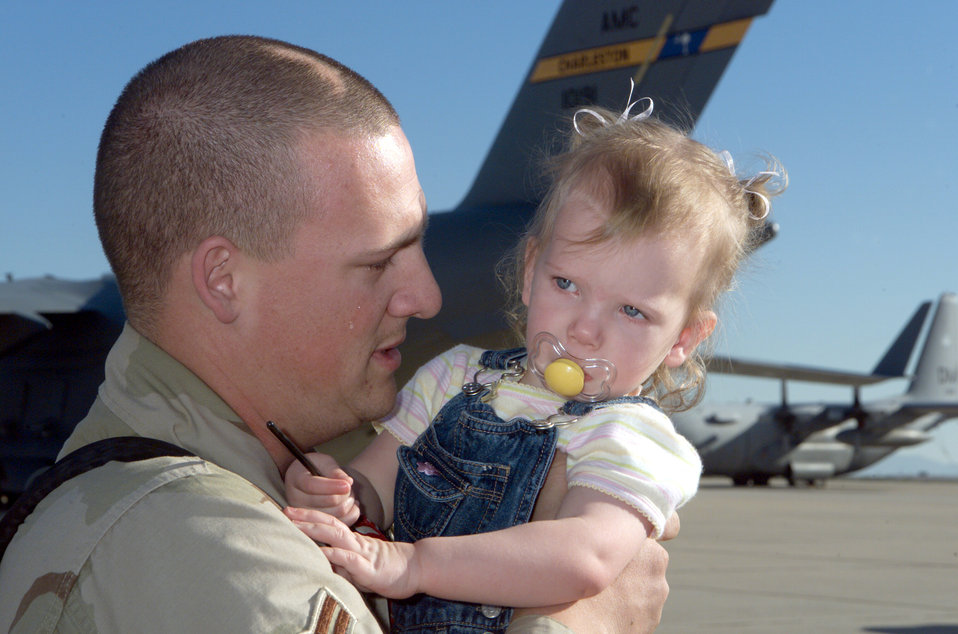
Daddy's home

DAVIS-MONTHAN AIR FORCE BASE, Ariz. -- Airman 1st Class Ryan Bryson picks up his daughter, Annika, for the first time in four months. Airman Bryson returned from Iraq on March 6 where he supported Operation Iraqi Freedom. He is assigned to the 355th Aircraft Maintenance Squadron here.